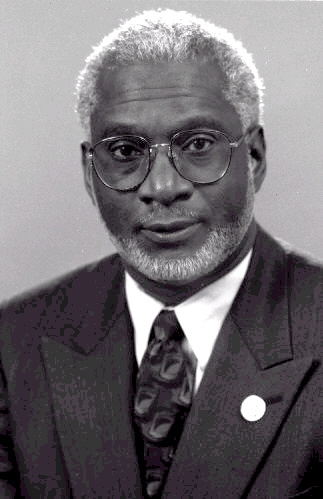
David Satcher, M.D., Ph.D., Director, CDC